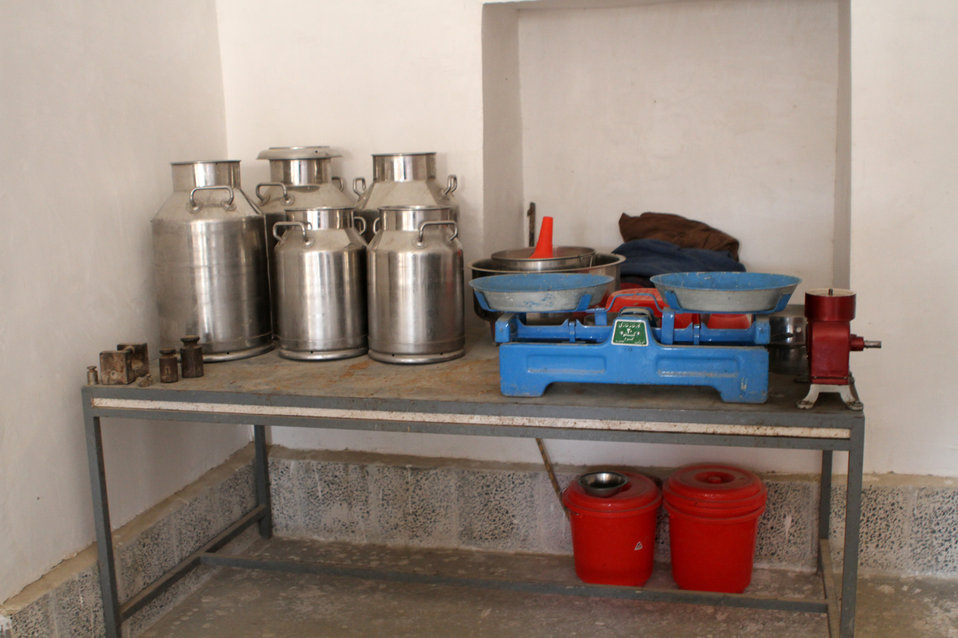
USAID funded Milk Processing Center